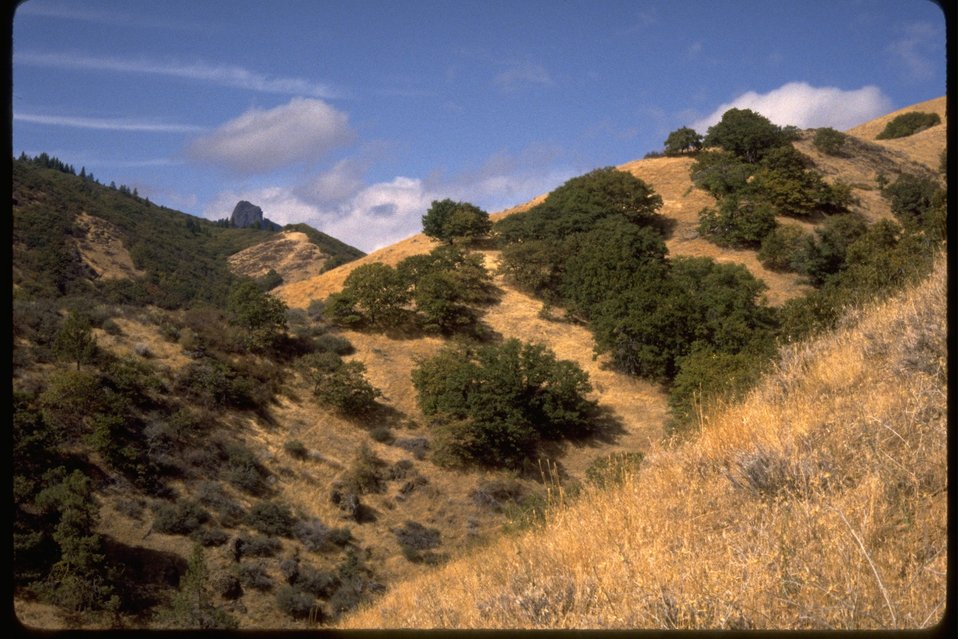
Scotch Creek RNA.